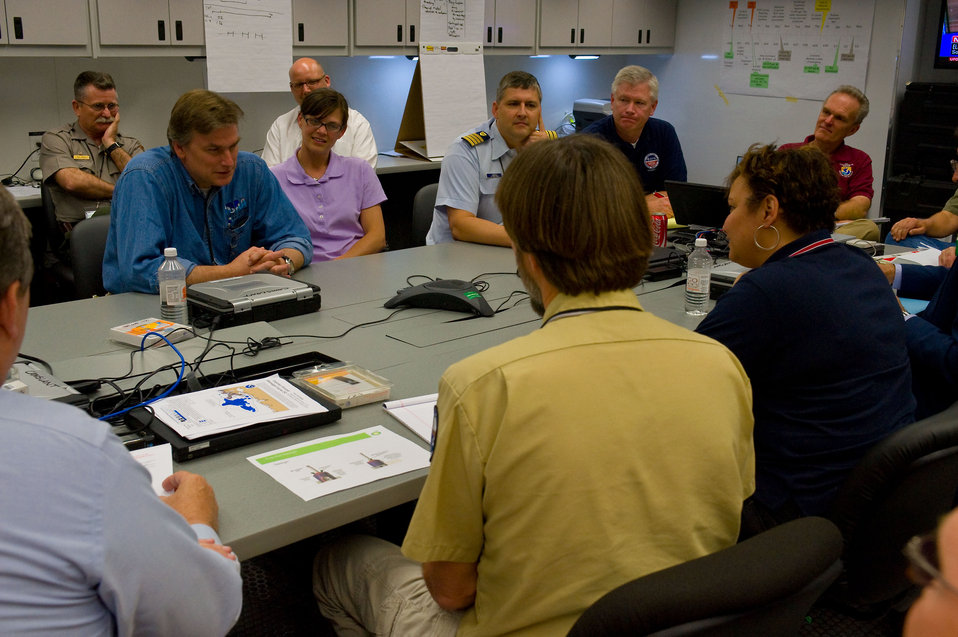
EPA Administrator Meets with Gulf Region Scientists

May 10, 2010 - EPA Administrator Lisa P. Jackson discusses technical issues in BP Oil spill remediation efforts with NOAA representatives.